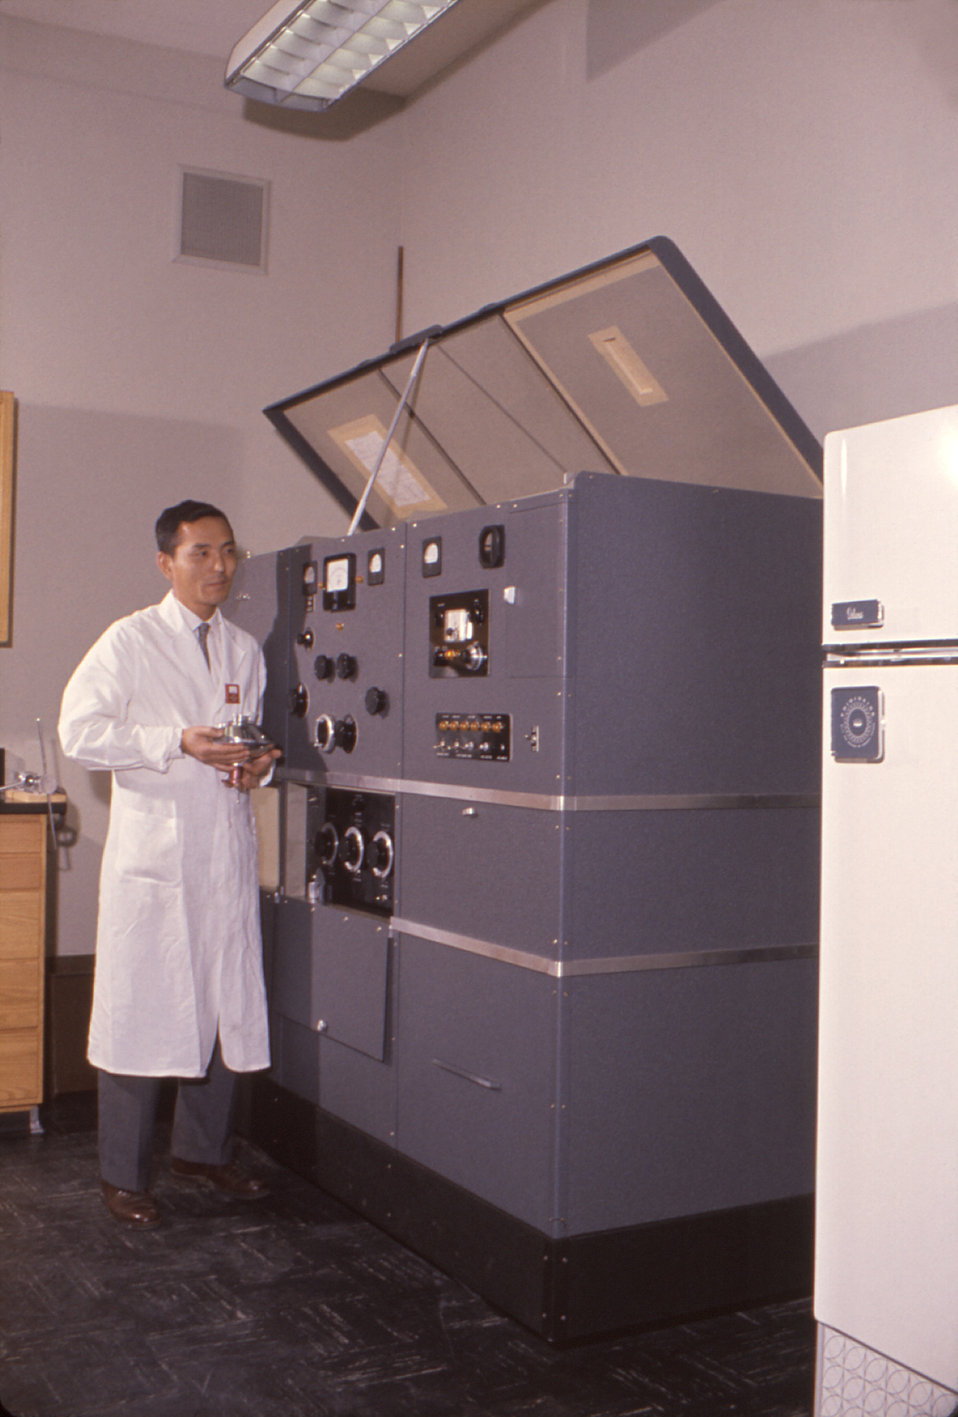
This 1960 photograph depicted Dr. Chung as he was standing aside an analytical ultracentrifuge.